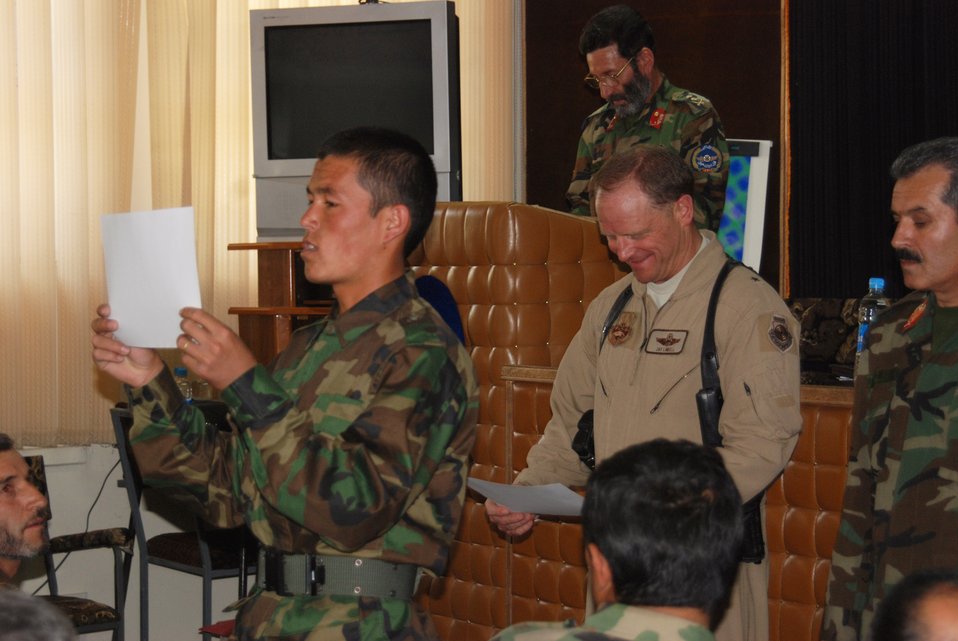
Afghan air corps soars again

Brig. Gen. Jay H. Lindell passes out graduation certificates to the students of the Afghan National army air corps April 30. Graduating students learned aircraft safety, computer instruction, the history of the air corps, logistics and equipment maintenance. The graduates will now join Afghan National Security Forces throughout Afghanistan.